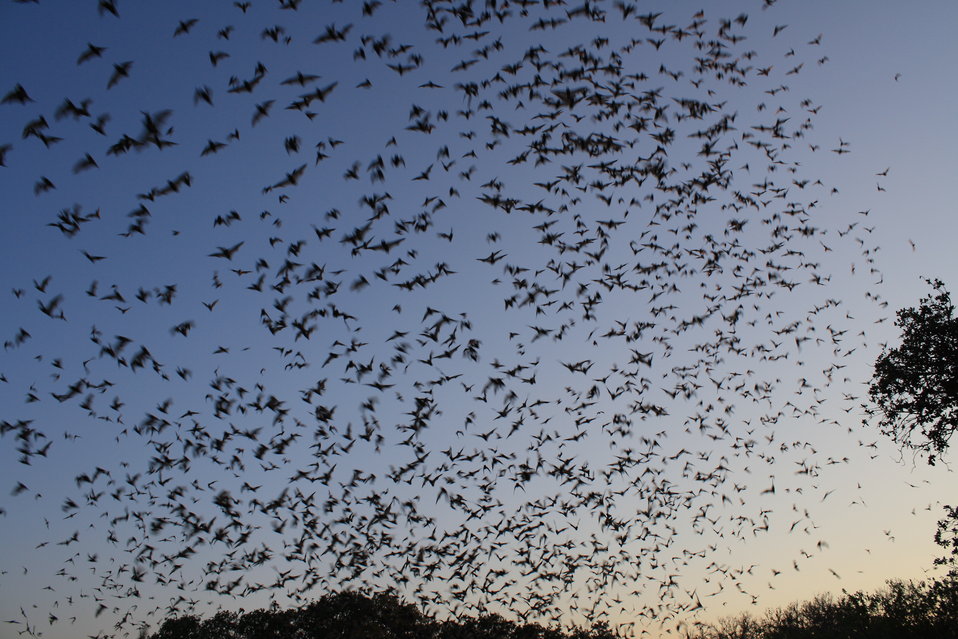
Mexican free-tailed bats exiting Bracken Bat Cave